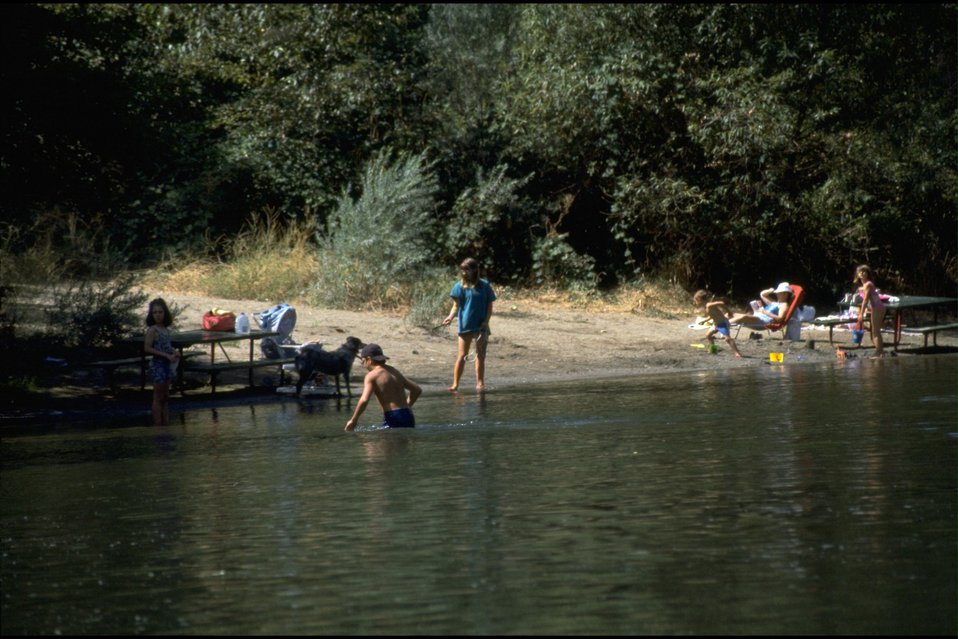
Rogue River - Mule Creek. River camp on West side of Mule Creek.